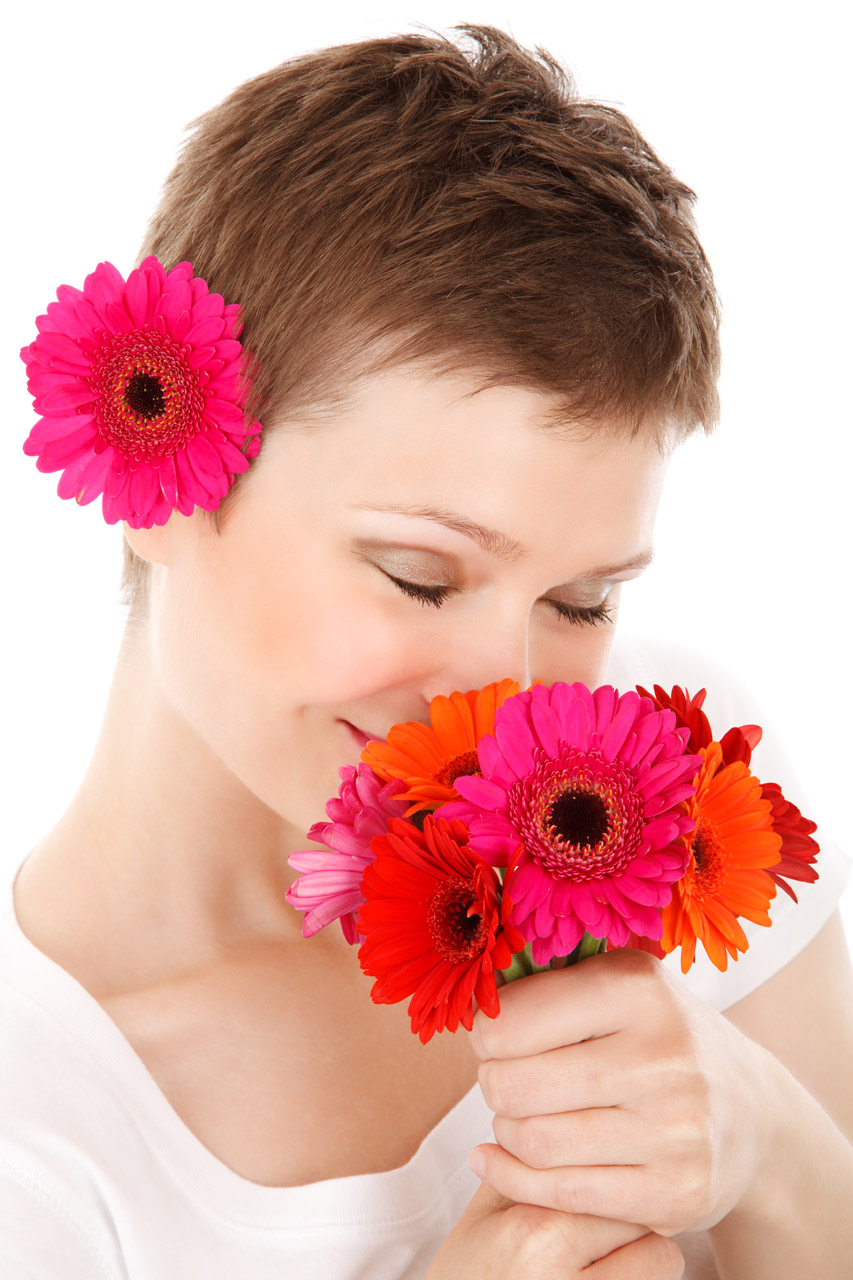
Smelling bouquet of flowers

Young woman smelling bouquet of colorful flowers isolated on white background.